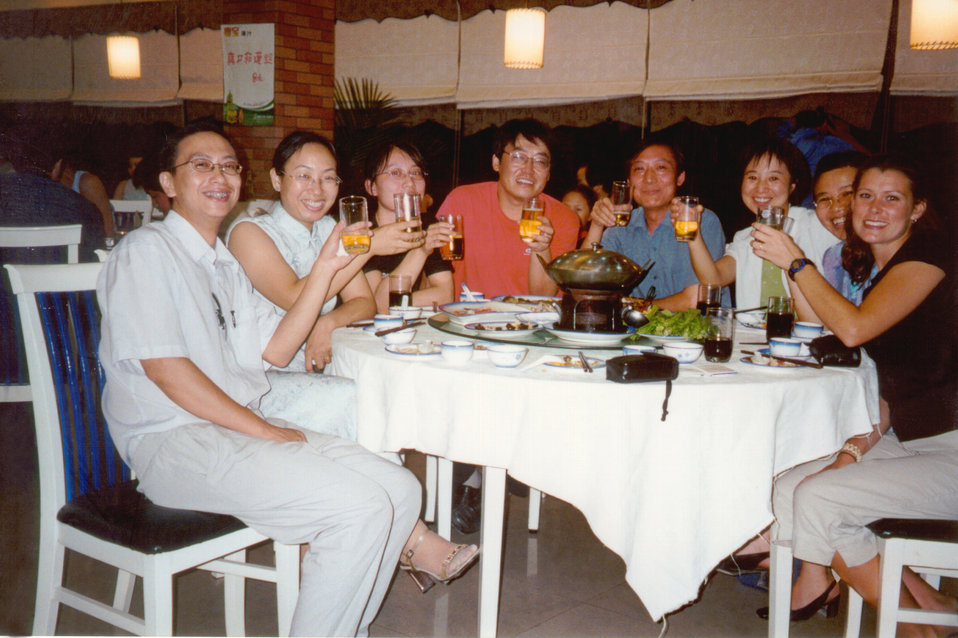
This image shoes Brittney Anderson-Spilker, of the CDC (far Rt), among colleagues she met during an 18 day assignment to China.